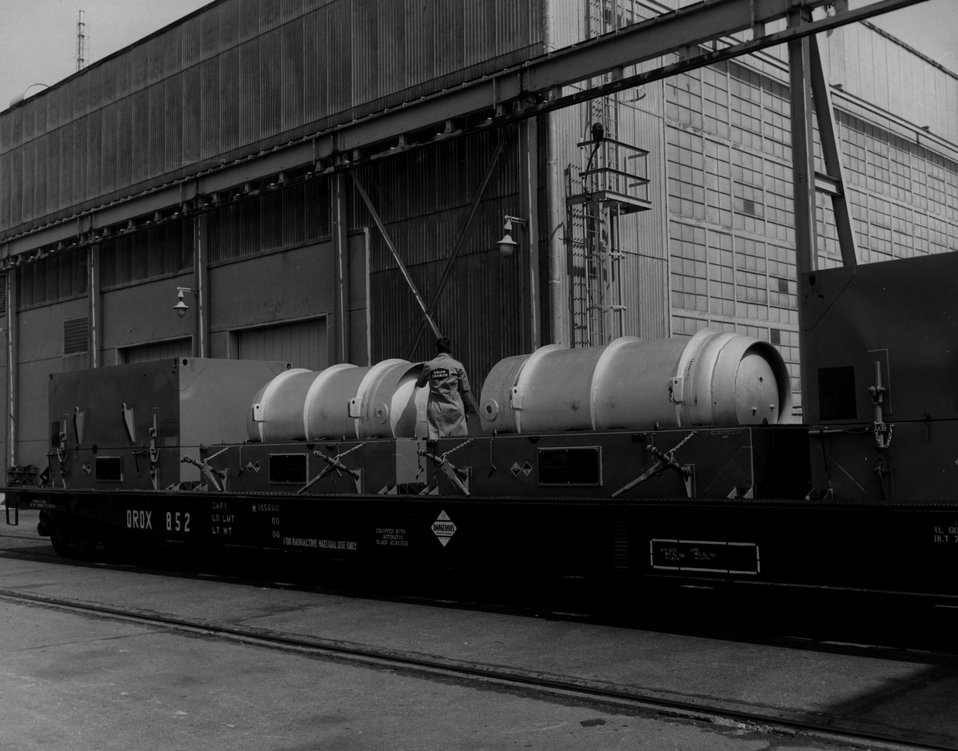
Modified railway cars with special protective equipment are now being used by the Paducah Gaseous Diffusion Plant to transport UF6 product, 1% enrichment, to other AEC gaseous diffusion plants in Oak Ridge, Tenn. and Portsmouth, Ohio. c. 1974